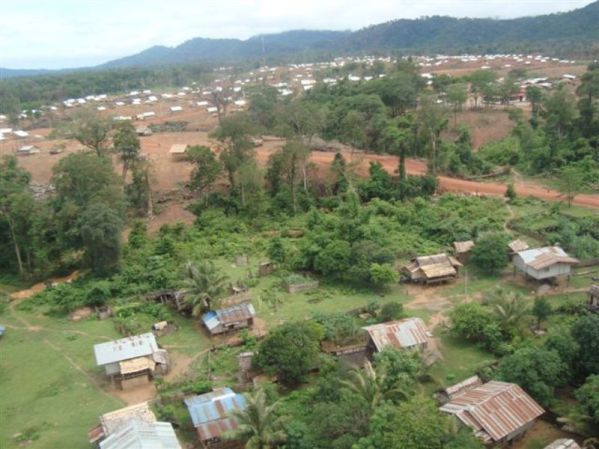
View of Phonekham Development Village

The photo shows the view of Phonekham Development Village on June 14, 2010. In the foreground is Pak Beuak Village, the closest of the villages in the area pre-dating Phonekham’s establishment in December 2009. Phonekham Village is in the background. Assistant Secretary for the Bureau of Population, Refugees, and Migration (PRM) Eric Schwartz visited Thailand and Laos in June to focus on the situation of Burmese ethnic minorities and Lao Hmong asylum seekers. Through PRM, the United States government provides financial assistance to the many organizations that are assisting these refugee populations in Thailand and Laos. Assistant Secretary Schwartz met with government officials and refugees themselves to see first-hand the challenges they face.